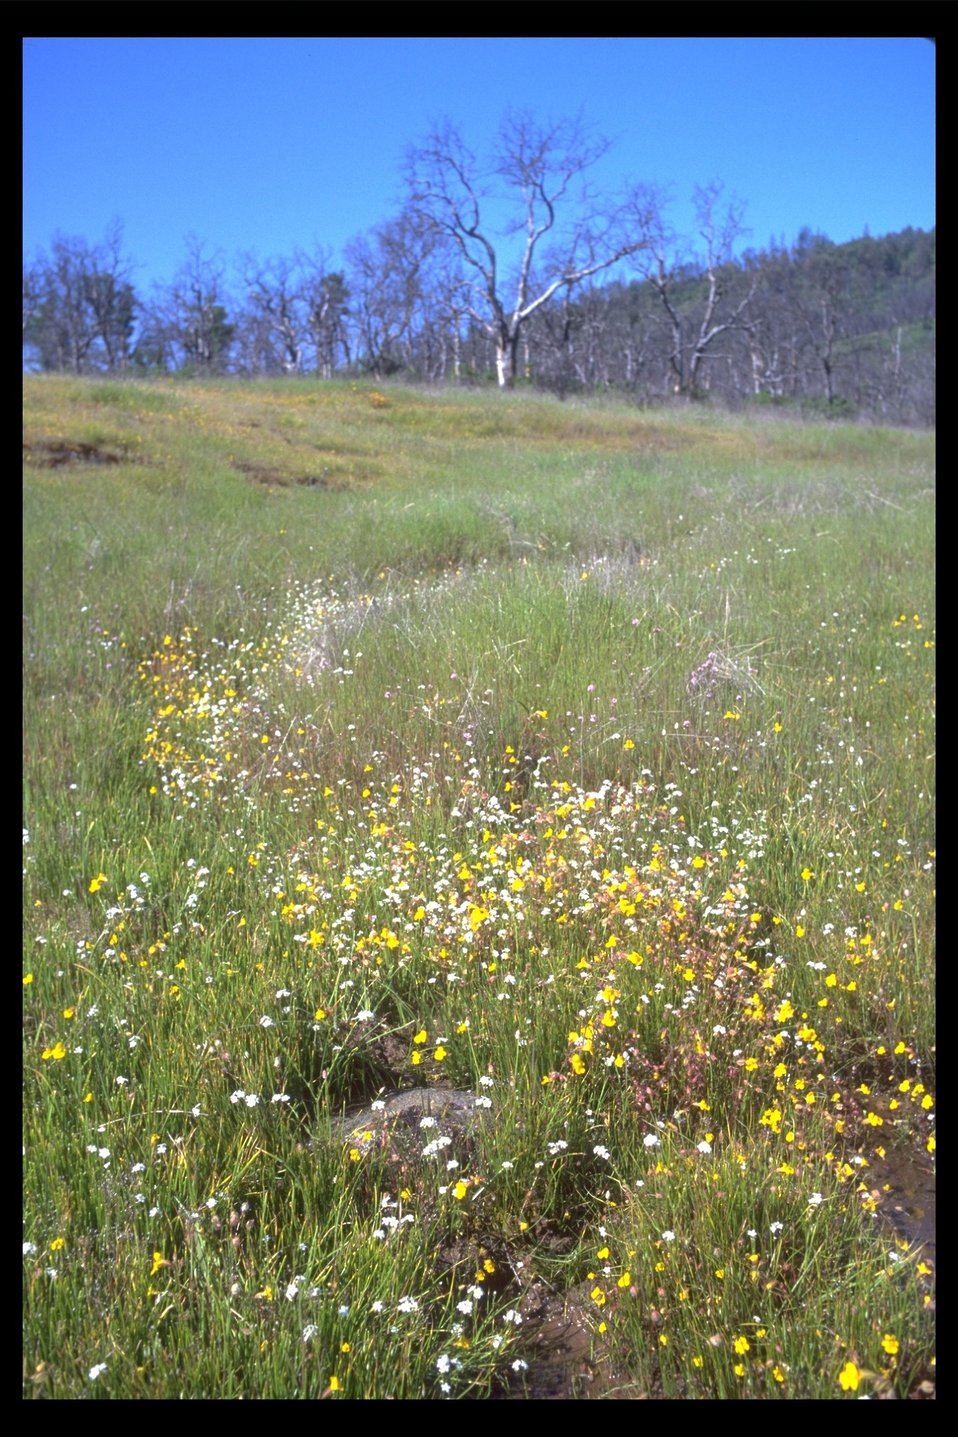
Creek near Meadows Road in Sams Valley.